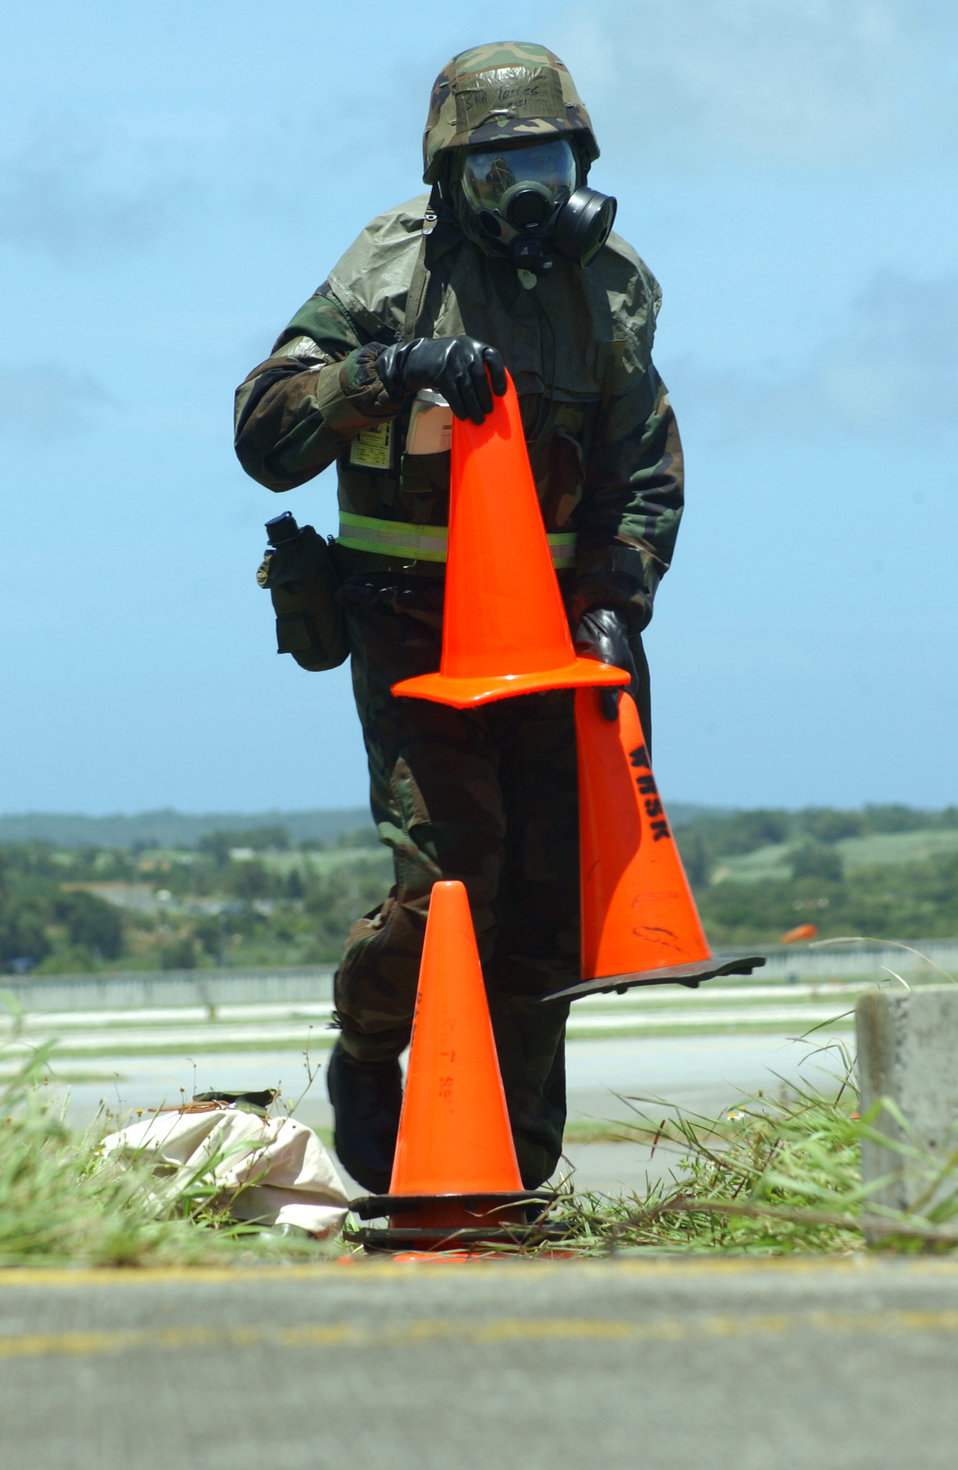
Marking the spot

KADENA AIR BASE, Japan -- Senior Airman Torres cordons off an area marking the location of simulated unexploded ordnance here Aug. 25. The scenario was part of the wing's operational readiness exercise. Airman Torres is assigned to the 18th Wing.